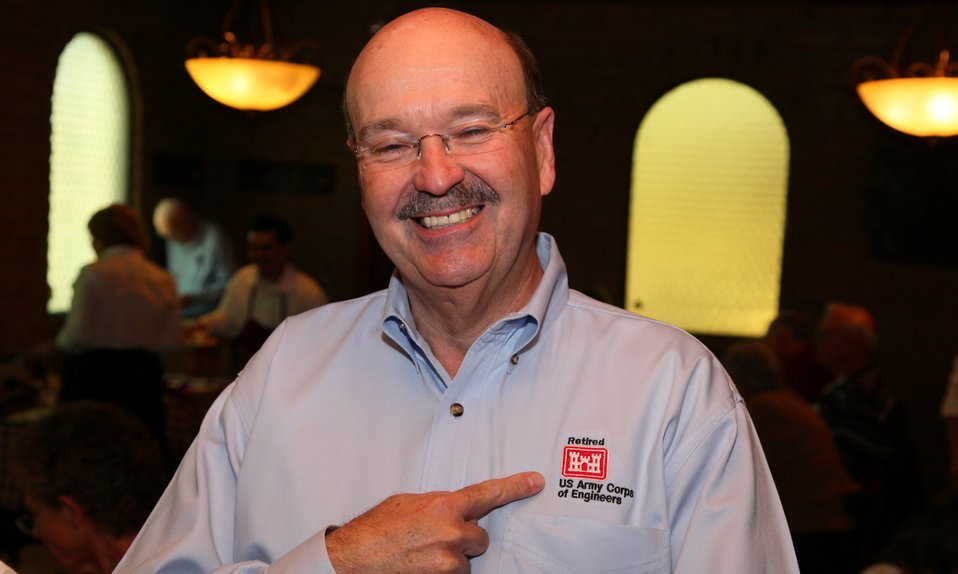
Retirees celebrate at 30th annual luncheon

Former U.S. Army Corps of Engineers Sacramento District employee Kevin Roukey displays his custom-made “retiree-status” shirt logo at the 30th annual Sacramento district retiree luncheon at Club Pheasant in West Sacramento, Calif. May 26, 2011.

The retirees in attendance collectively represent more than a millennium of service to the Corps.